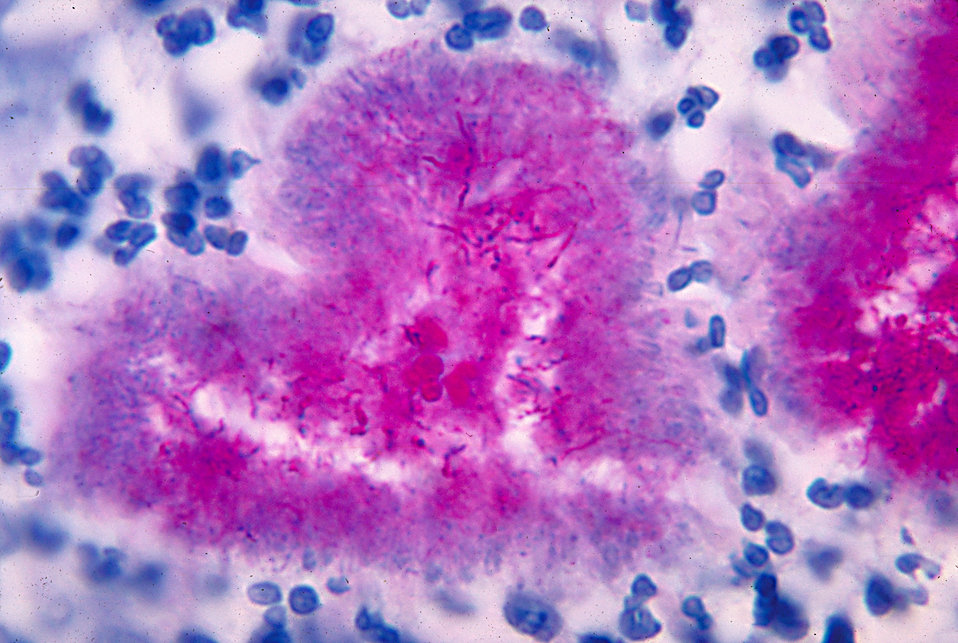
Note the presence of the gram-positive acid-fast Nocardia brasiliensis bacteria using a modified Fite-Faraco stain.